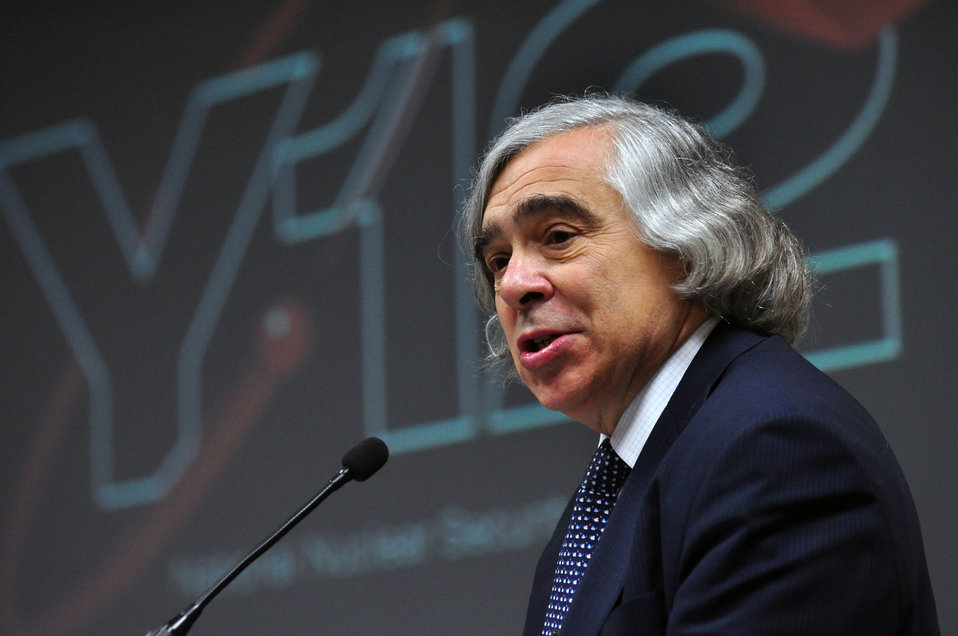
DOE Secretary of Energy Ernest Moniz in Oak Ridge

13-067 DOE photo Lynn Freeny 6-3-2013 Oak Ridge Tennessee